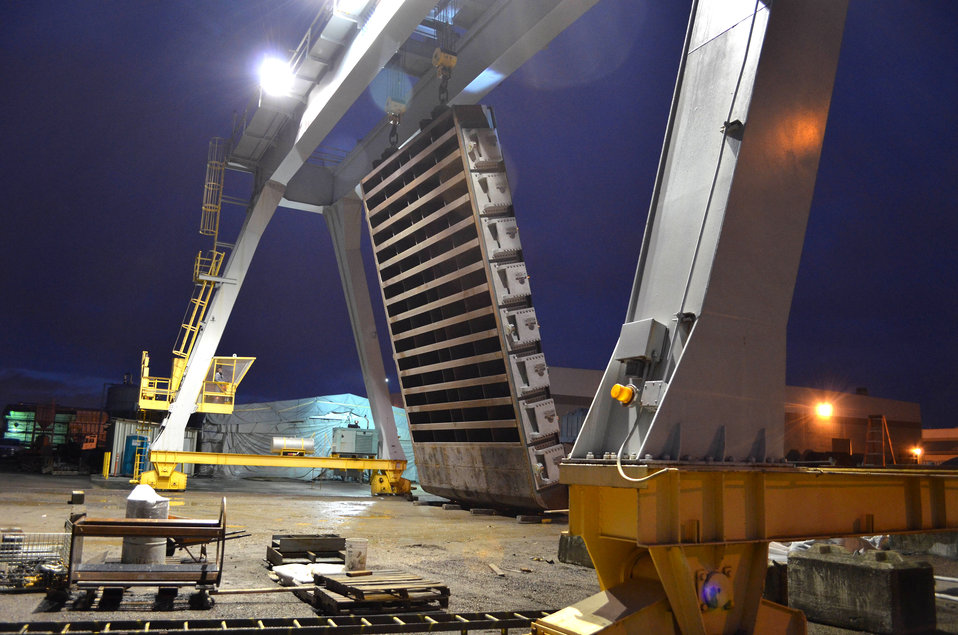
Giant Folsom spillway gates nearly ready for 600-mile journey to dam

An assembled bulkhead gate is raised by a large crane at Oregon Iron Works’ Vancouver, Wash., facility during a hang test Feb. 1, 2014. A hang test is conducted to make sure the gate hangs straight and will properly fit the new Folsom Dam auxiliary spillway’s dam in Folsom, Calif. When complete, the spillway will allow operators to release water from Folsom Lake earlier and more safely during large storms to help reduce the risk of flooding for the Sacramento region.